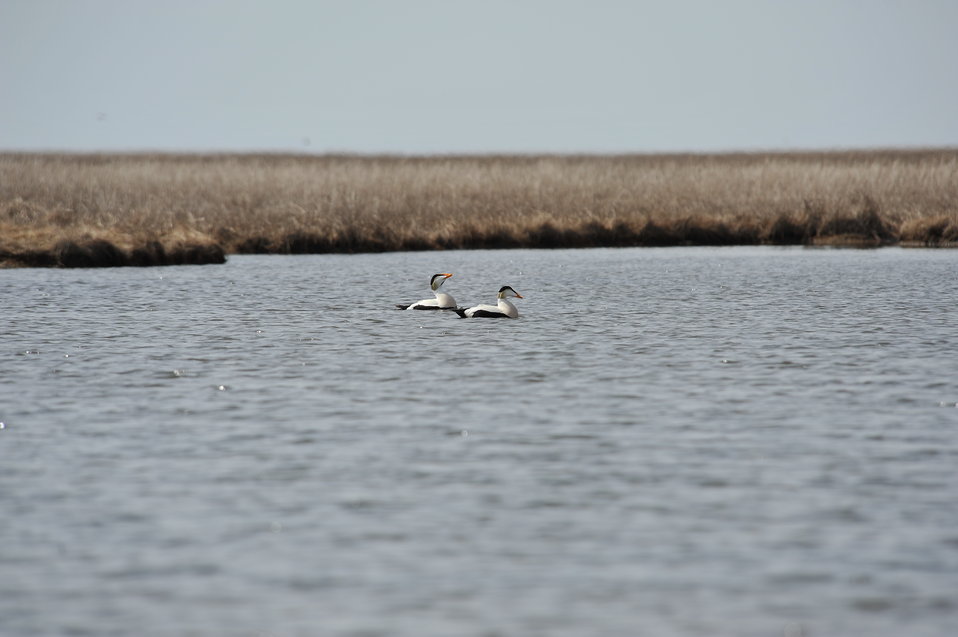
Common Eider males

USFWS Yukon Delta NWR
Common eider males vocalizing between each other.